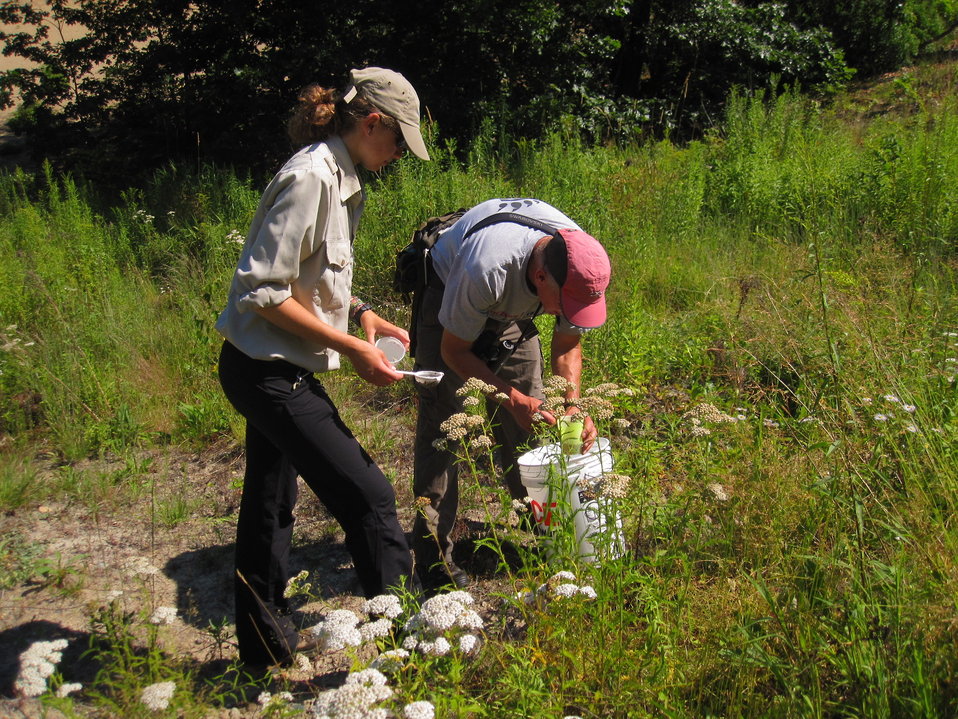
Claire Revekant in field

U.S. Fish and Wildlife Service